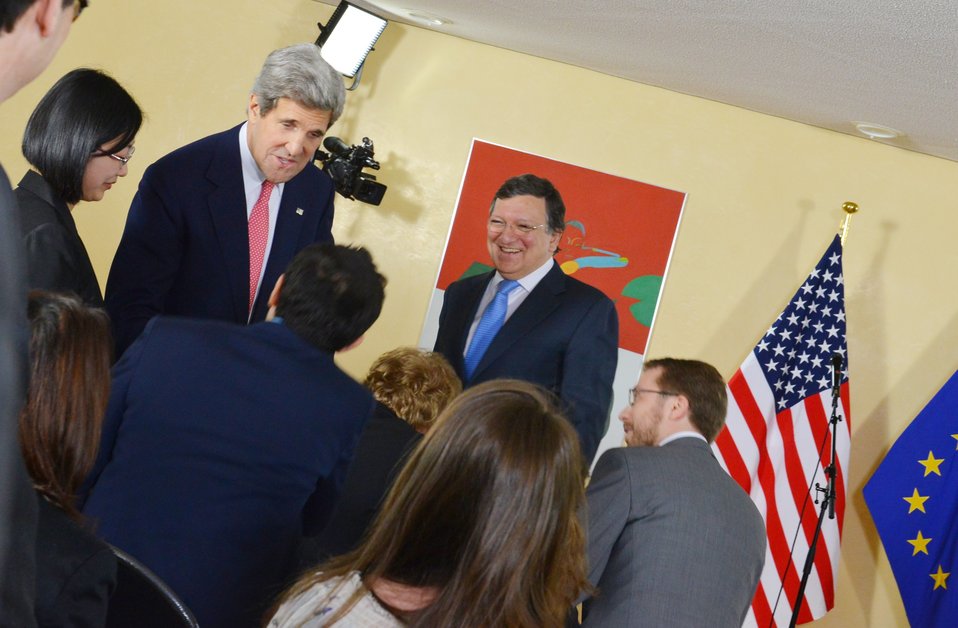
Secretary Kerry and European Commission President Barroso Meet With Young Fellows

U.S. Secretary of State John Kerry and European Commission President Jose Manuel Barroso meet with young European and American fellows in Brussels, Belgium, on April 22, 2013.